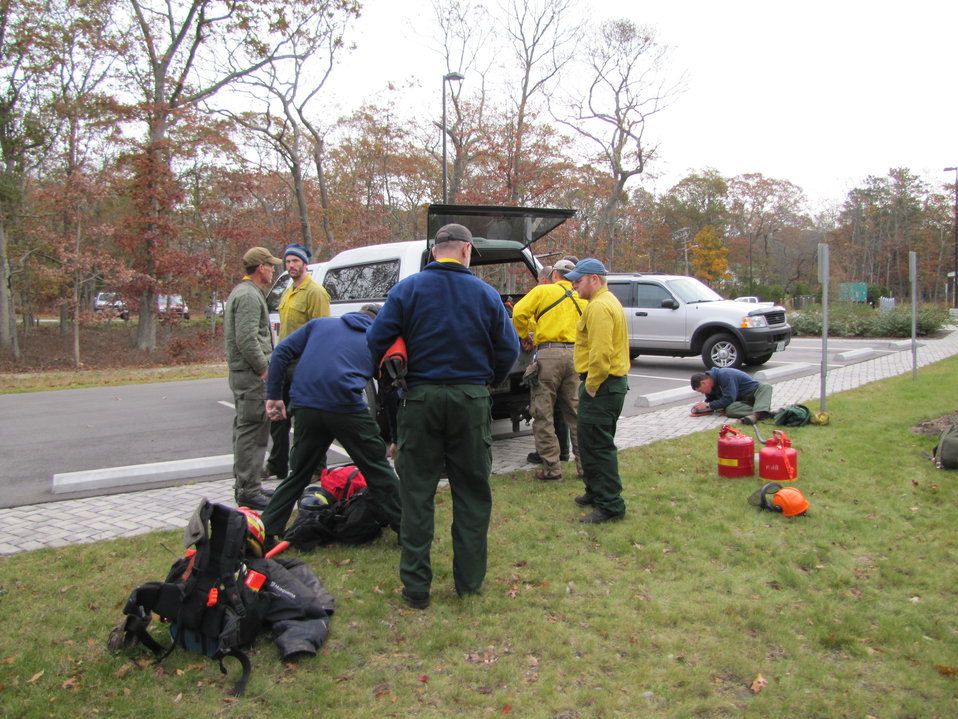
Help arrives from Maine refuges (NY)

Sawyers from Moosehorn and other Maine National Wildlife Refuges prepare to go to Target Rock National Wildlife Refuge.